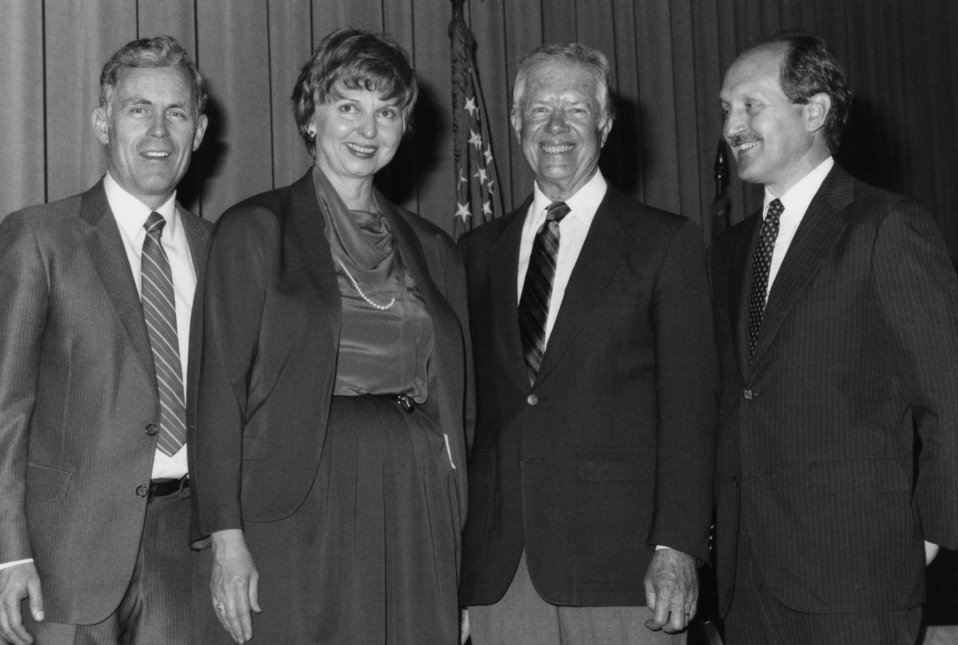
Taken in 1984 at the Centers for Disease Control's Roybal Clifton Road Campus, from left to right this photograph features Dr. James O. Mason, Ms. Anita Highsmith, former U.S. President Jimmy Carter (1977-1981), and Dr. Gary R. Noble.